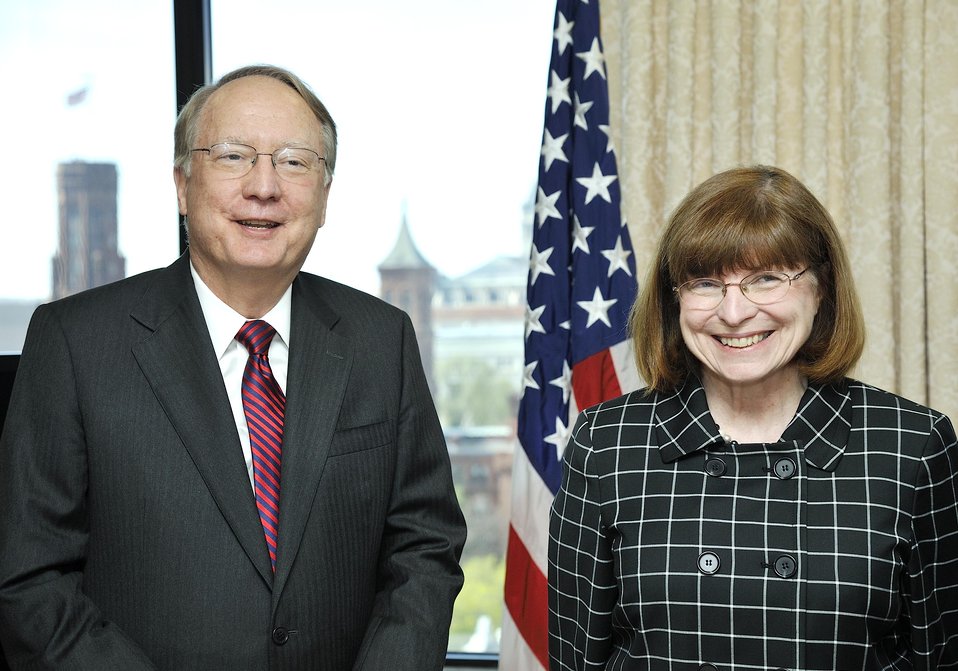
General Frank G. Klotz as the Department of Energy’s new Undersecretary for Nuclear Security and NNSA Administrator with his wife, Nancy on April 17, 2014 .